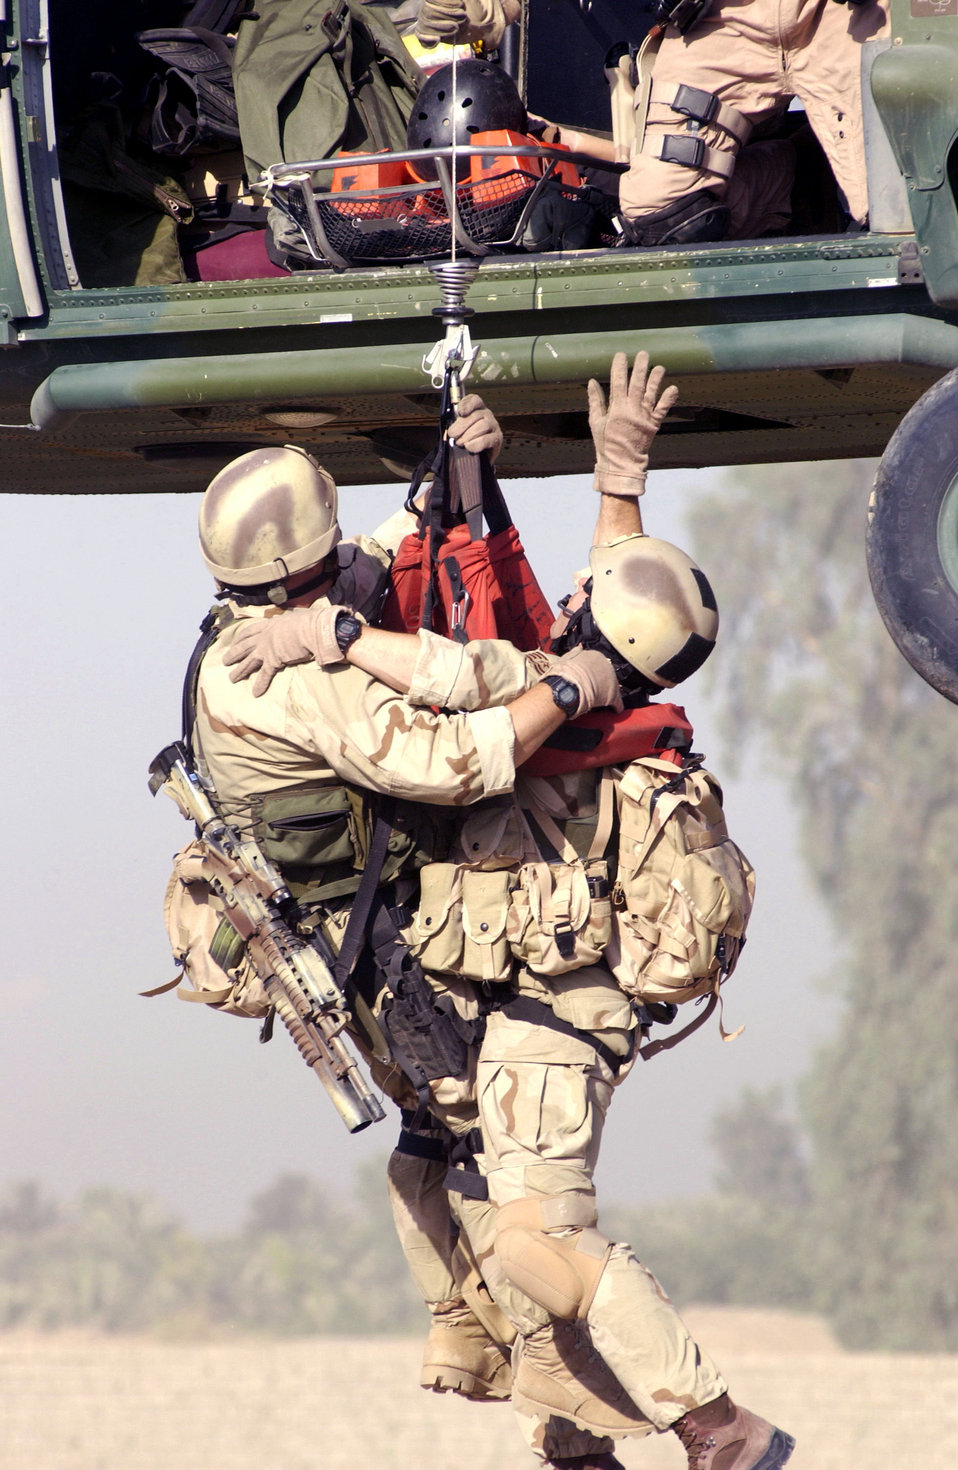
Need a lift?

OPERATION IRAQI FREEDOM (AFPN) -- Pararescuemen assigned to Baghdad International Airport perform a hoist extraction of a survivor during an urban operations training exercise July 3.